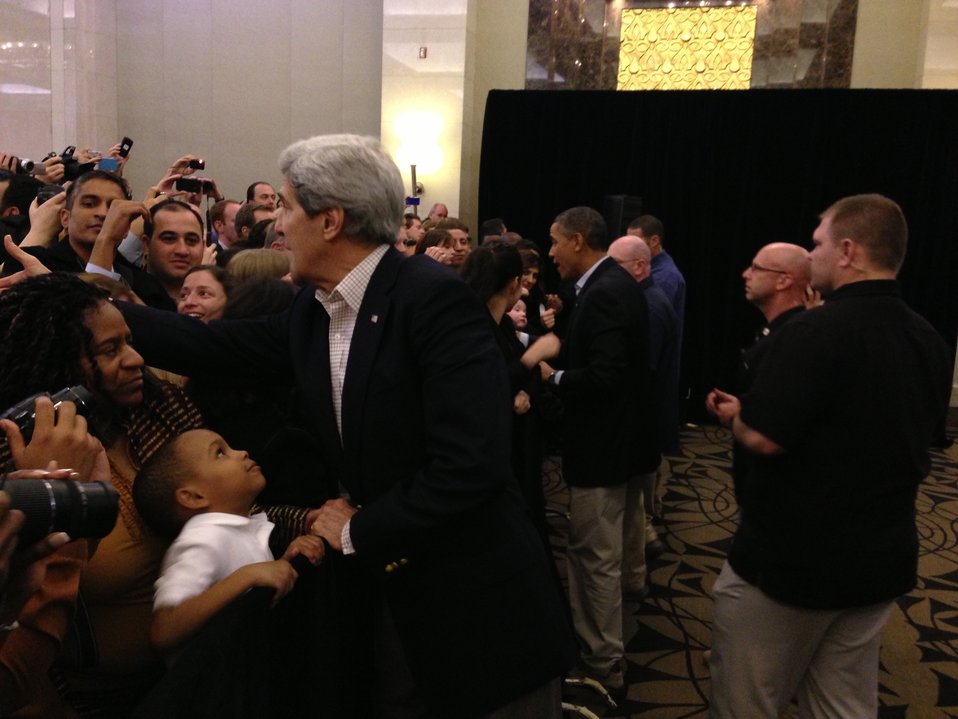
President Obama and Secretary Kerry Shake Hands With U.S. Embassy Amman Employees and Their Families

U.S. President Barack Obama and Secretary of State John Kerry greet employees and families of U.S. Embassy Amman on March 23, 2013.